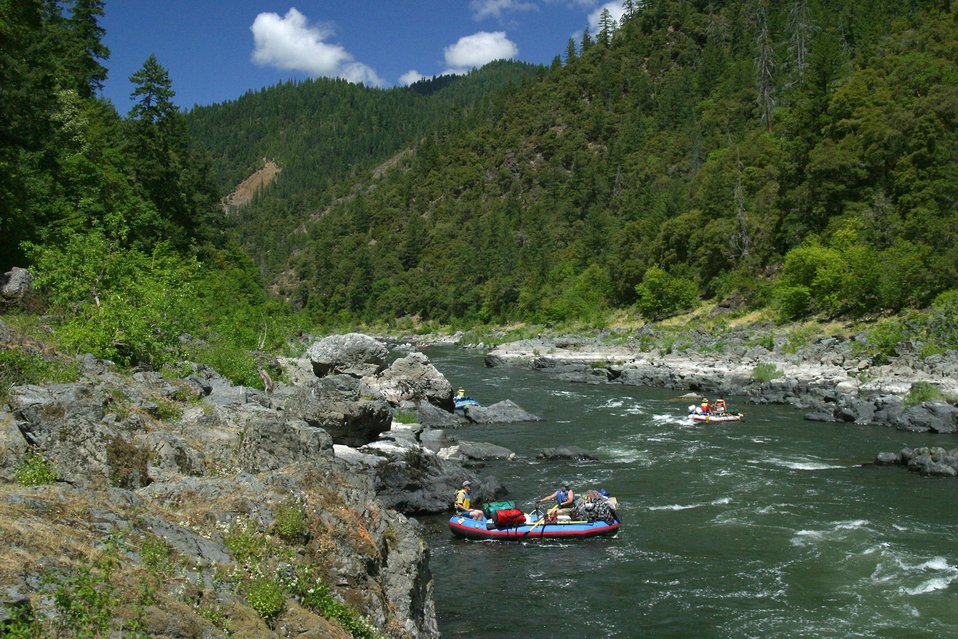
Looking down river below Rainie Falls